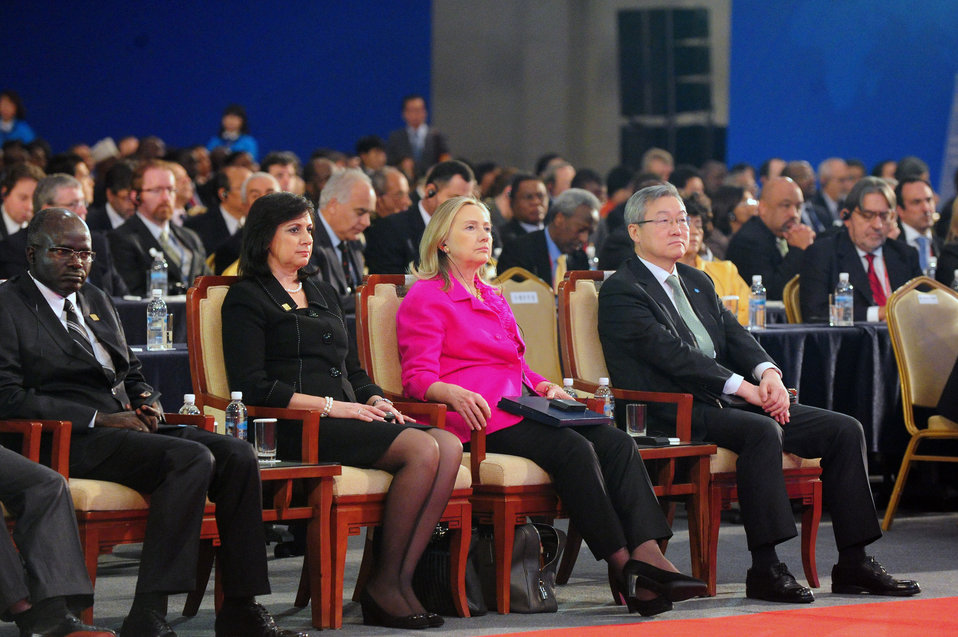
Secretary Clinton Listens to a Speaker

U.S. Secretary of State Hillary Rodham Clinton listens to a speaker at the opening ceremony of the Fourth High-Level Forum on Aid Effectiveness (HLF4) in Busan, South Korea, on November 30, 2011.